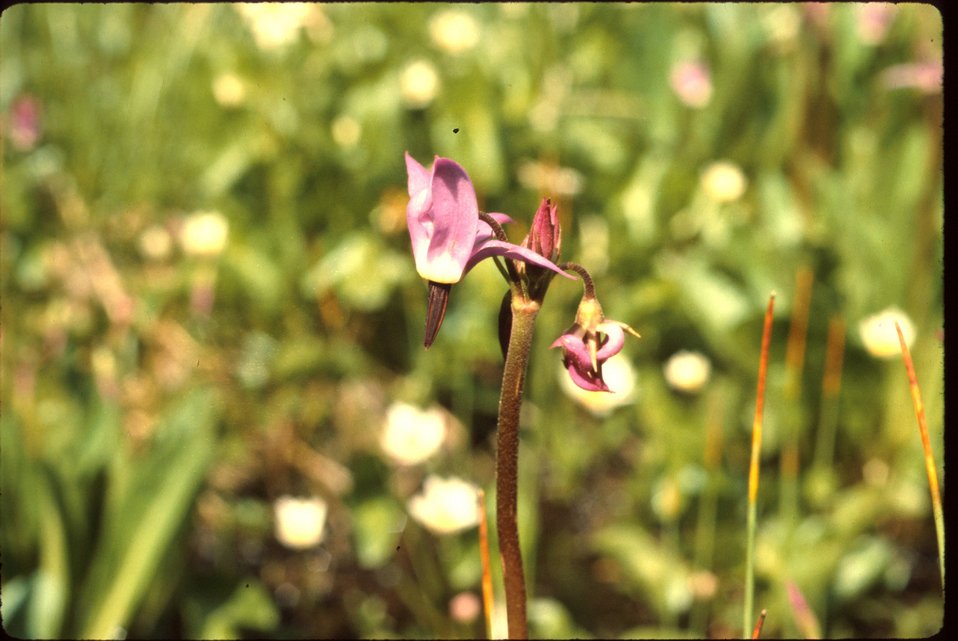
Shooting star Dodecatheon sp. Wildflower